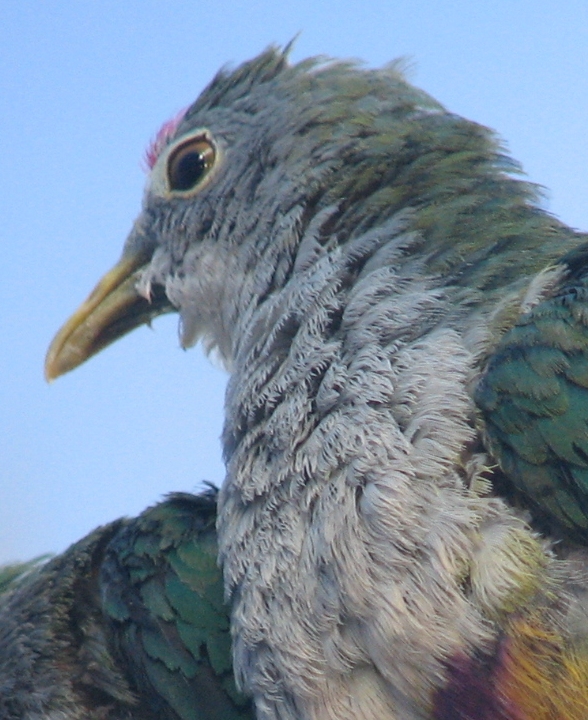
Beautiful Fruit Dove